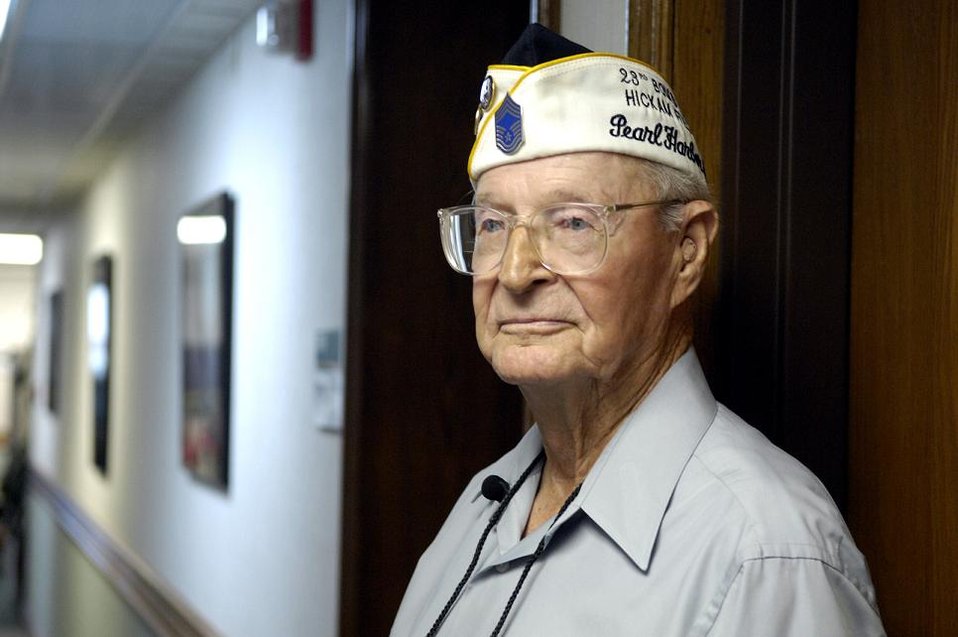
Retired Chief Master Sgt. Ralph Barnett stands in the hallway of the Pacific Air Forces Headquarters where he used to live Dec. 4, 2006 at Hickam Air Force Base, Hawaii. In 1941 the PACAF Headquarters was a consolidated barracks. Then Sgt. Barnett was the assistant armament chief for the 23rd Bombardment Squadron assigned to Hickam Field.